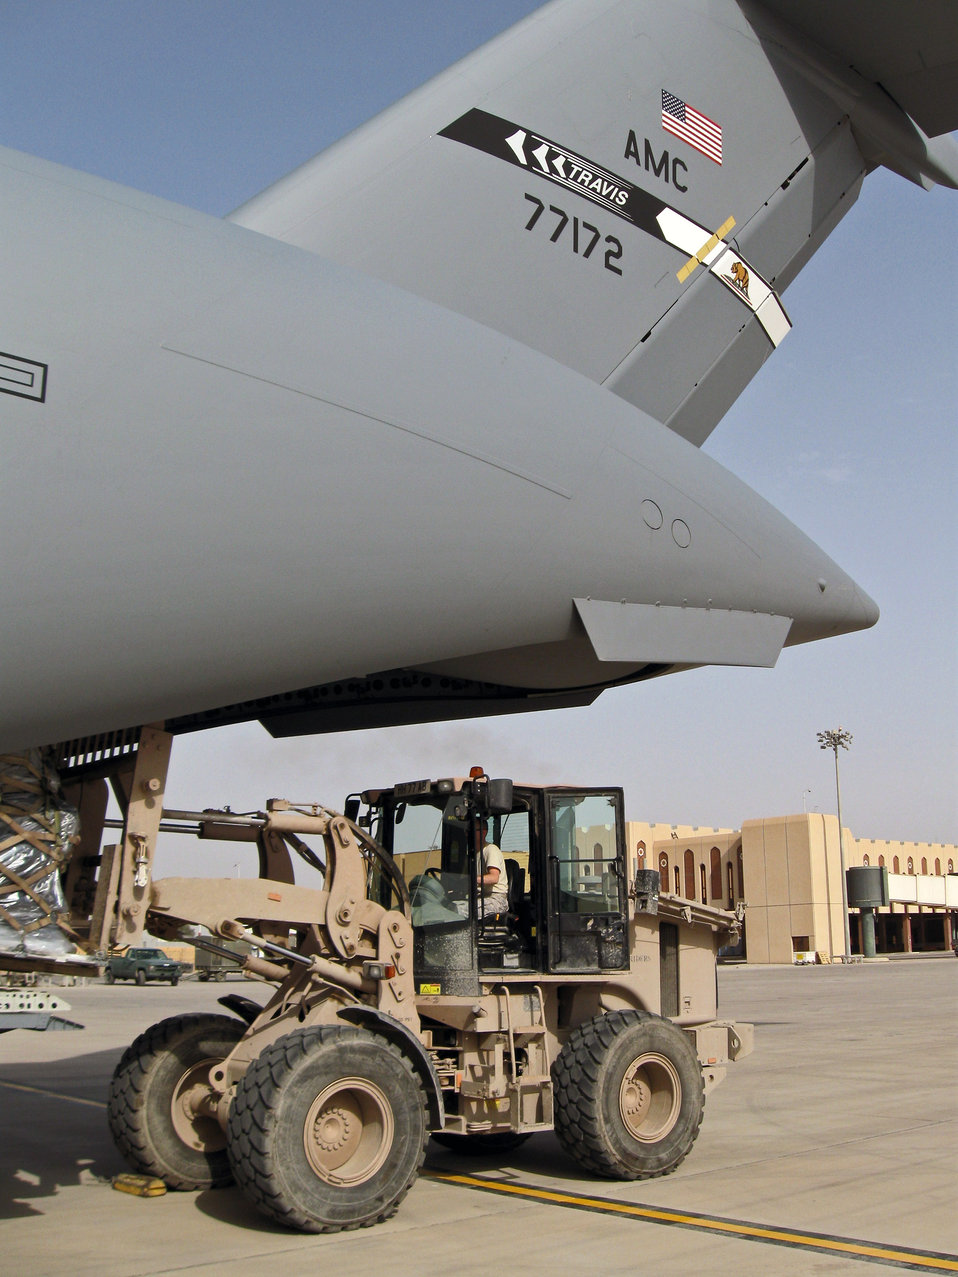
615th helps with Basra changeover

Airman 1st Class Daniel Cuhen, an aerial port specialist with the 615th Contingency Response Wing from Travis Air Force Base, Calif., unloads cargo March 31 from a C-17 Globemaster III at Basra International Airport, Iraq. Airman Cuhen is deployed to Basra as part of a contingency response element that is supporting the transition of responsibility from British to U.S. forces